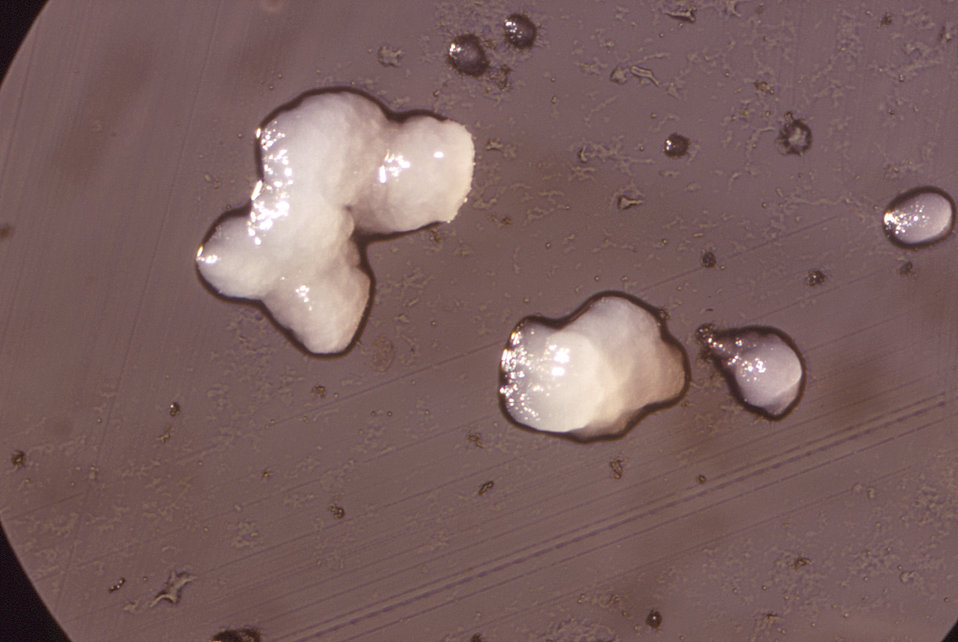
Magnified 15X, this image depicts the morphologic characteristics displayed by a number of mature Gram-positive, Actinomyces naeslundi bacterial colonies, of the 'rough' strain, W-1096, which were cultivated on an unknown culture medium.